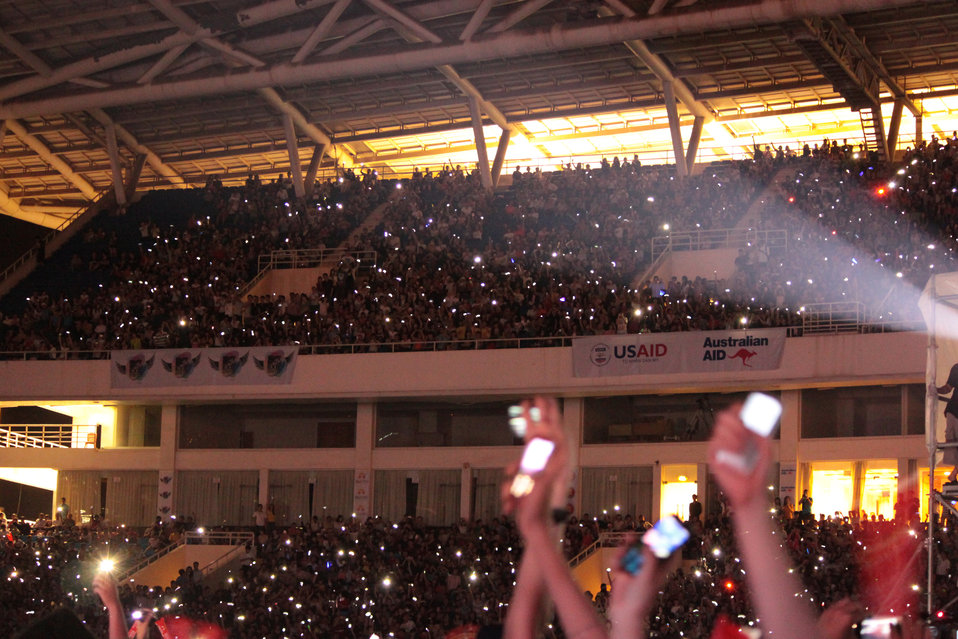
A massive crowd of fans are thrilled at the MTV EXIT concert in Hanoi against human trafficking

A great concert that attracts 40,000 fans in My Dinh Stadium in Hanoi with strong messages against human trafficking.